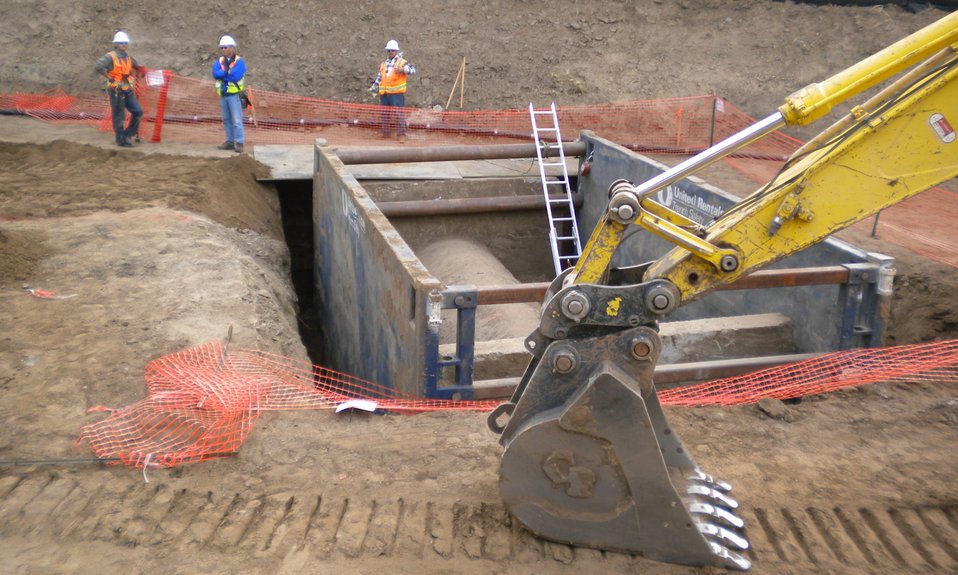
Pressurized sewer main running through the levee

U.S. Army Corps of Engineers Sacramento District contractors continue construction of a levee seepage barrier along the American River Parkway Trail near the California State University-Sacramento campus, shown Sept. 16, 2011. Construction at this site was complicated by a pressurized sewer main (center) running through the levee.